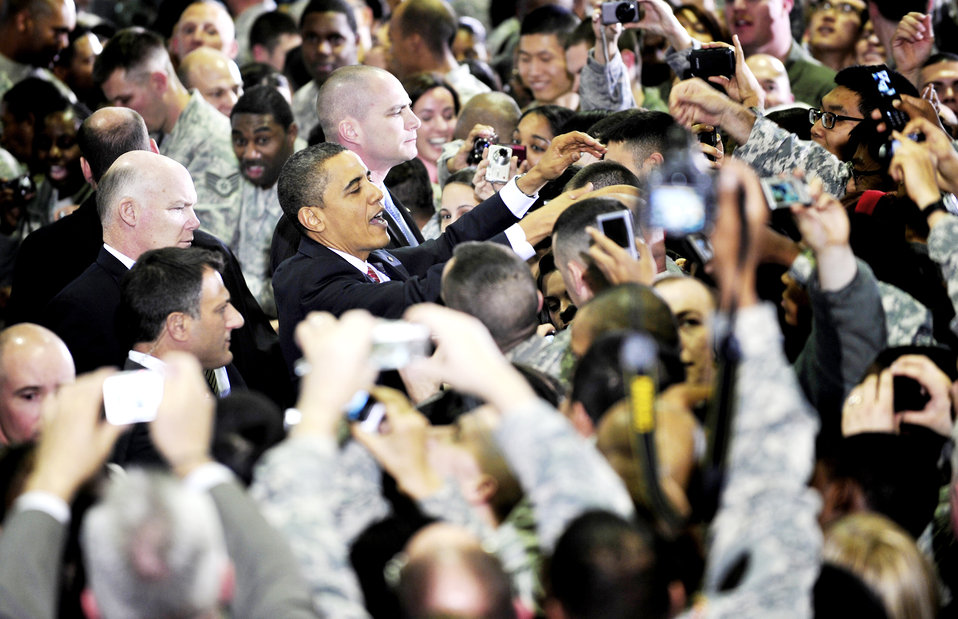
President Obama holds troop rally at Osan

President Barack Obama shakes hands with U.S. servicemembers Nov. 18, 2009, at Osan Air Base, South Korea. This was President Obama's last stop of his Asian visit.